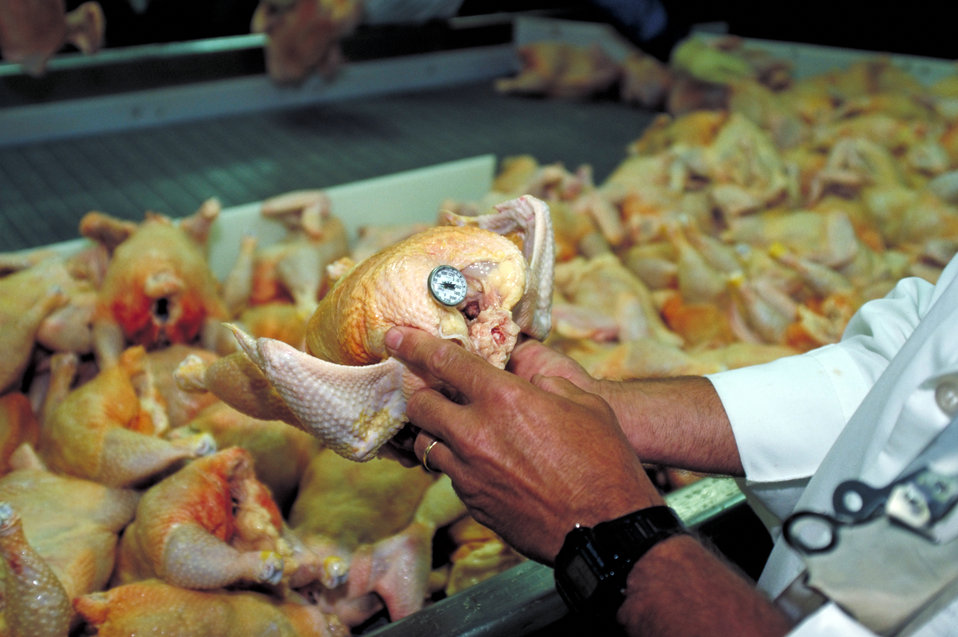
U.S. Department of Agriculture (USDA) Food Safety Inspection Service (FSIS) inspector checks the temperature of chicken carcasses at various control points to compare them with those measured and recorded by the plant to prevent multiplication of pathogenic bacteria in compliance with Hazard Analysis and Critical Control Points (HACCP) issued by FSIS on June 15, 1995. USDA photo Lester Shepherd.